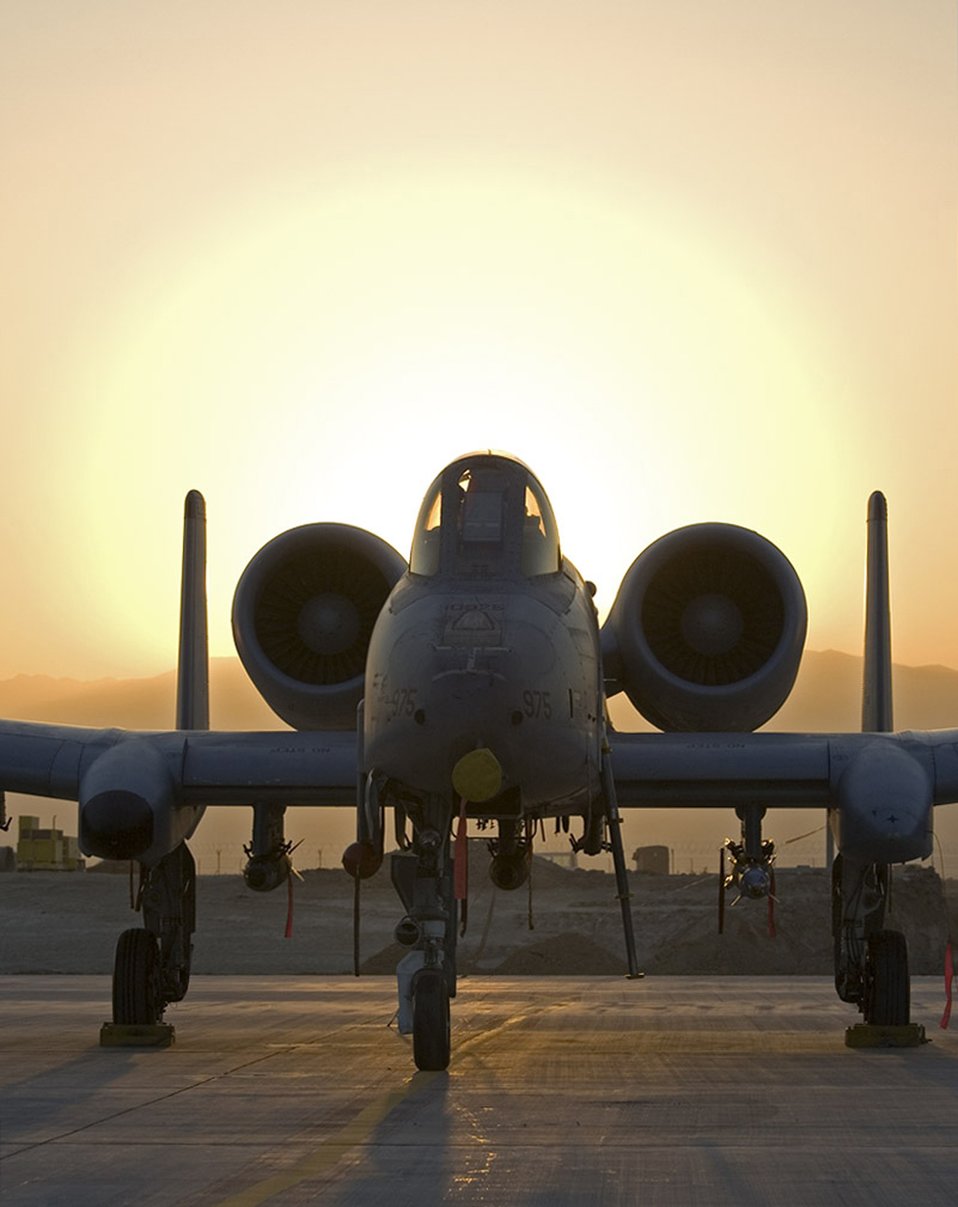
A-10 at dawn

An A-10 Thunderbolt II is parked on a ramp at Bagram Air Base, Afghanistan, Nov. 22, 2007.